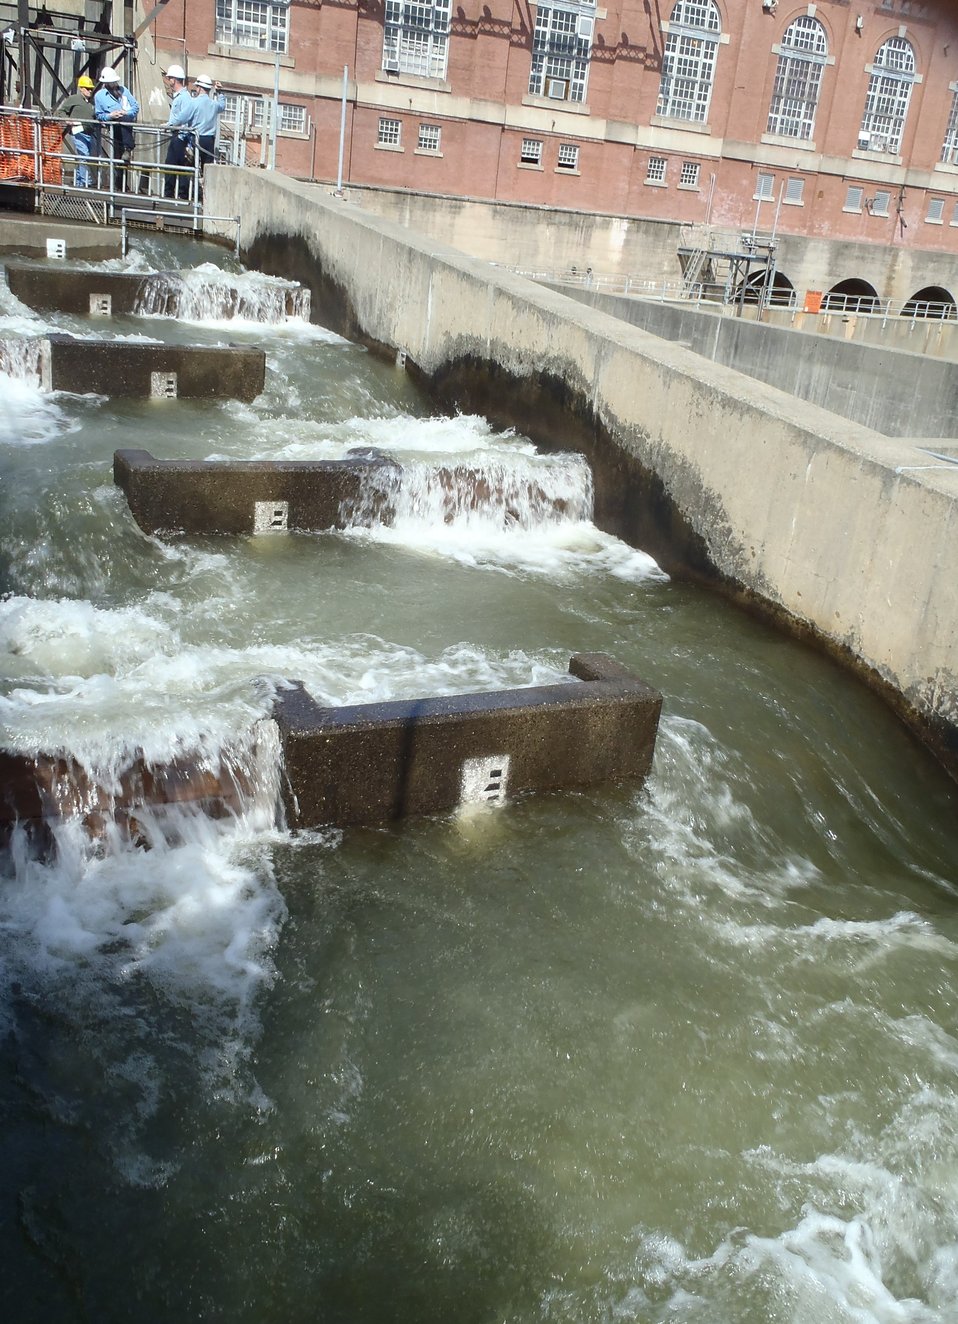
Ice Harbor fish ladder in VT